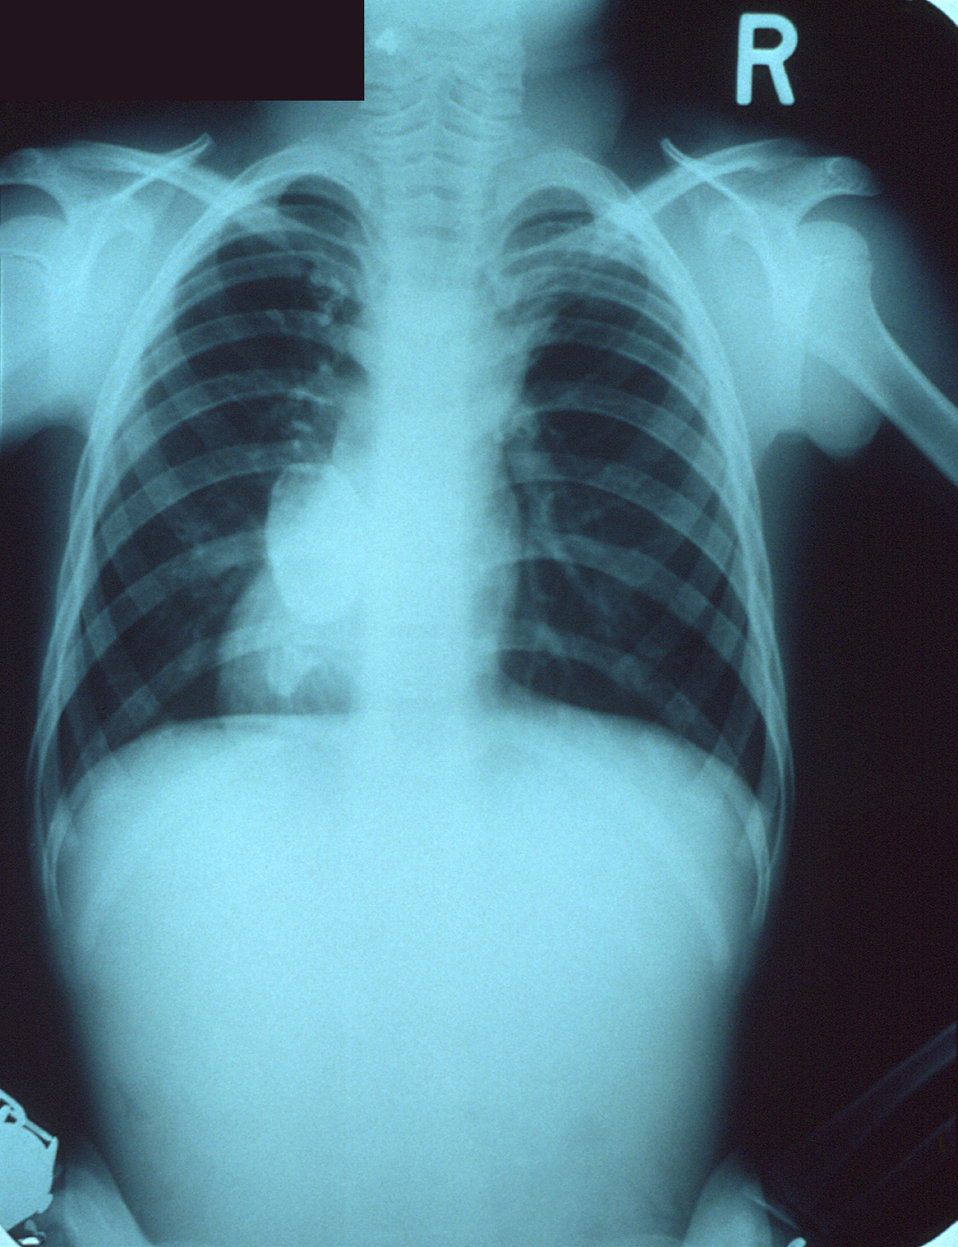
This PA x-ray depicts atelectatic, and bronchiectatic changes in this child's right upper pulmonary lung field.